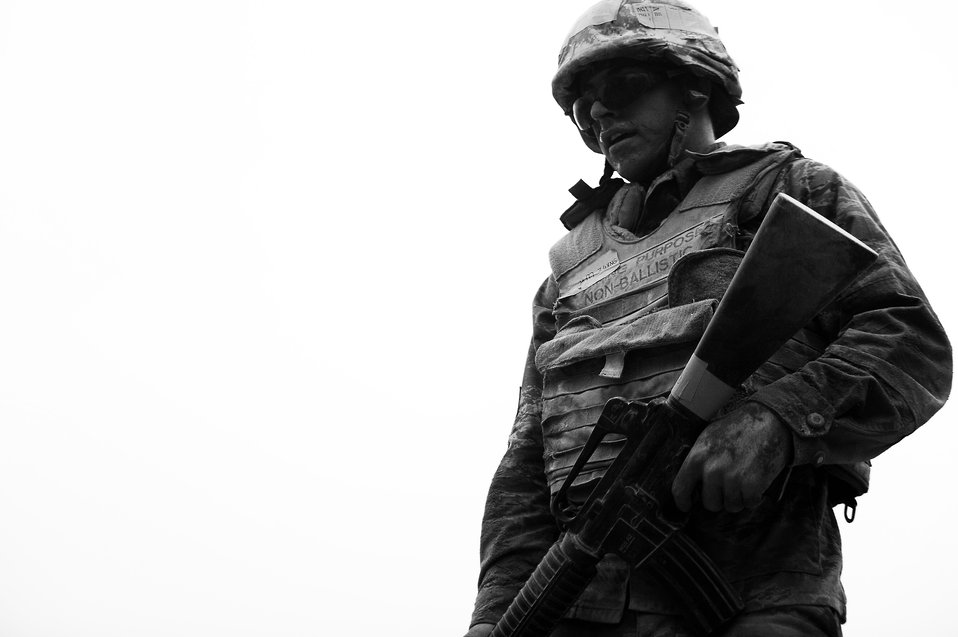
BEAST

Basic trainees go through their sixth week of Air Force basic military training at the Basic Expeditionary Airman Skills Training on May 25, 2011, at Lackland Air Force Base, Texas.